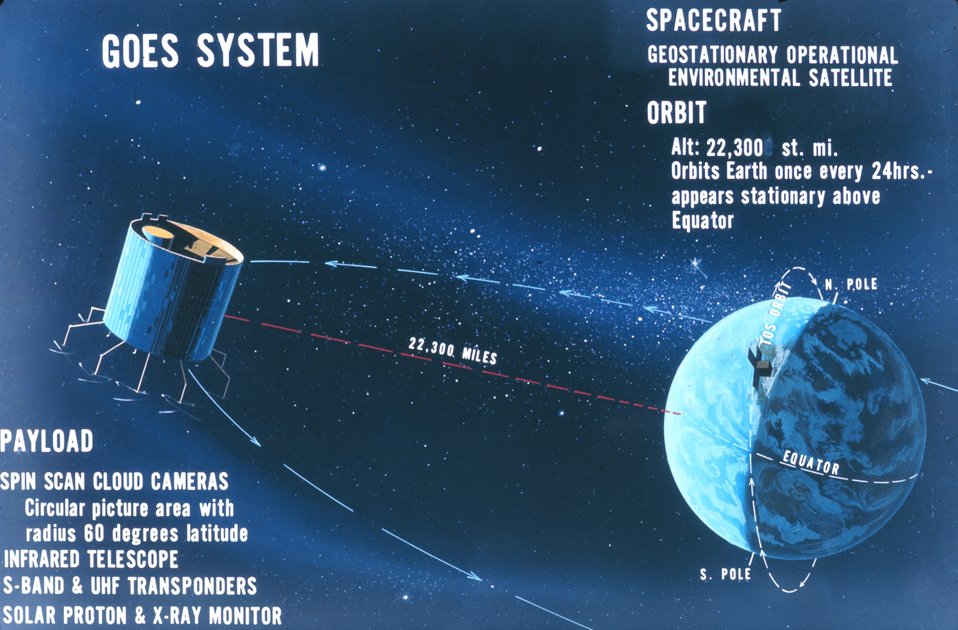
Graphic of GOES satellite operation. Satellite shown is similar to ATS series of satellites.